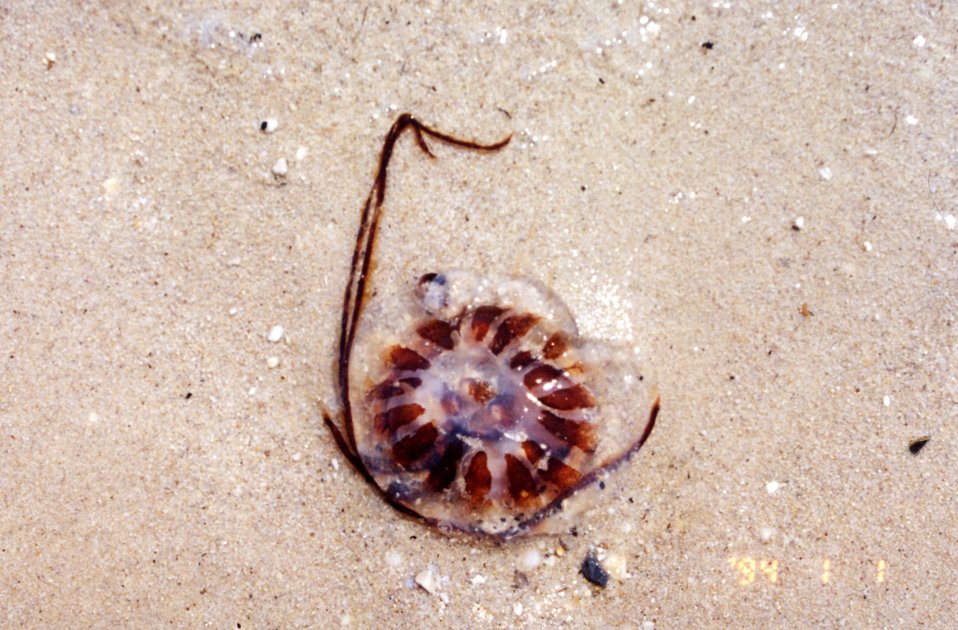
Sea nettle on a Patuxent River Beach.